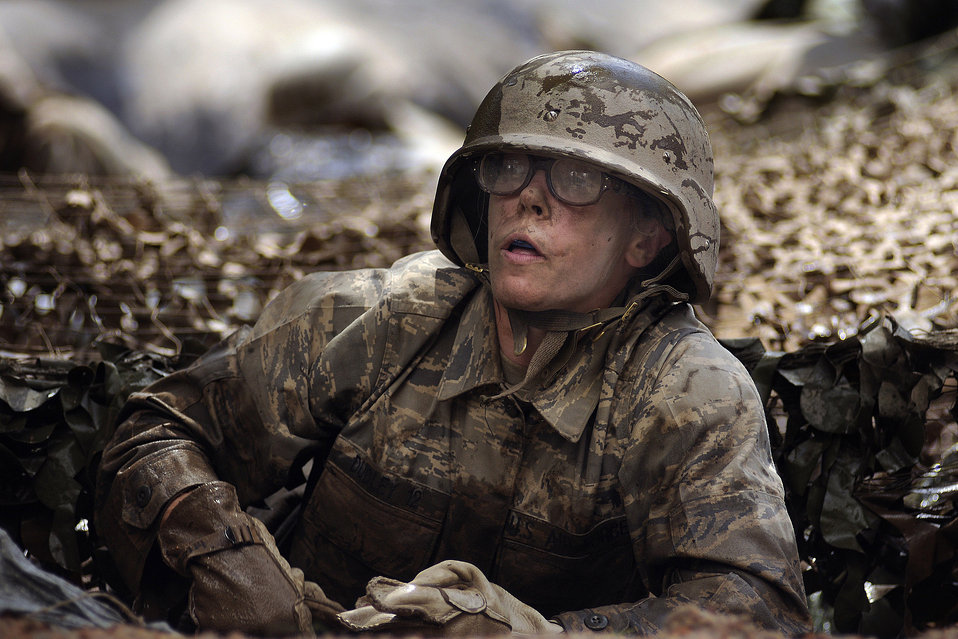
What's next?

During basic cadet training, U.S. Air Force Academy Basic Cadet Jenna Dudley crawls out of a water obstacle on the assault course July 25 in the Jacks Valley training area near Colorado Springs, Colo.